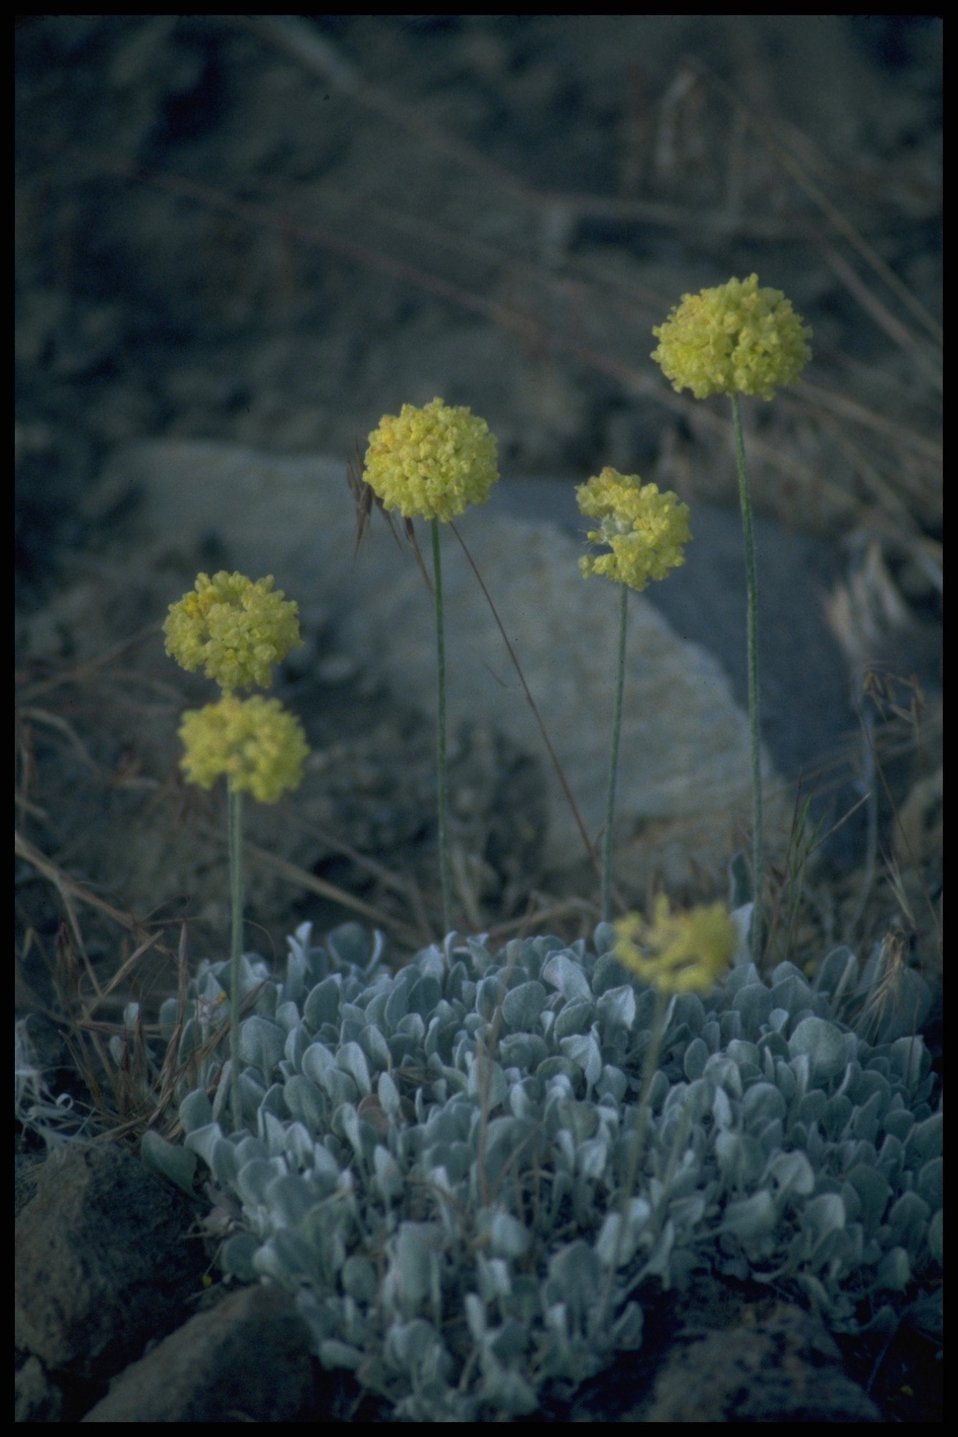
Medium shot of Buckwheat habitat, Lakeview District.